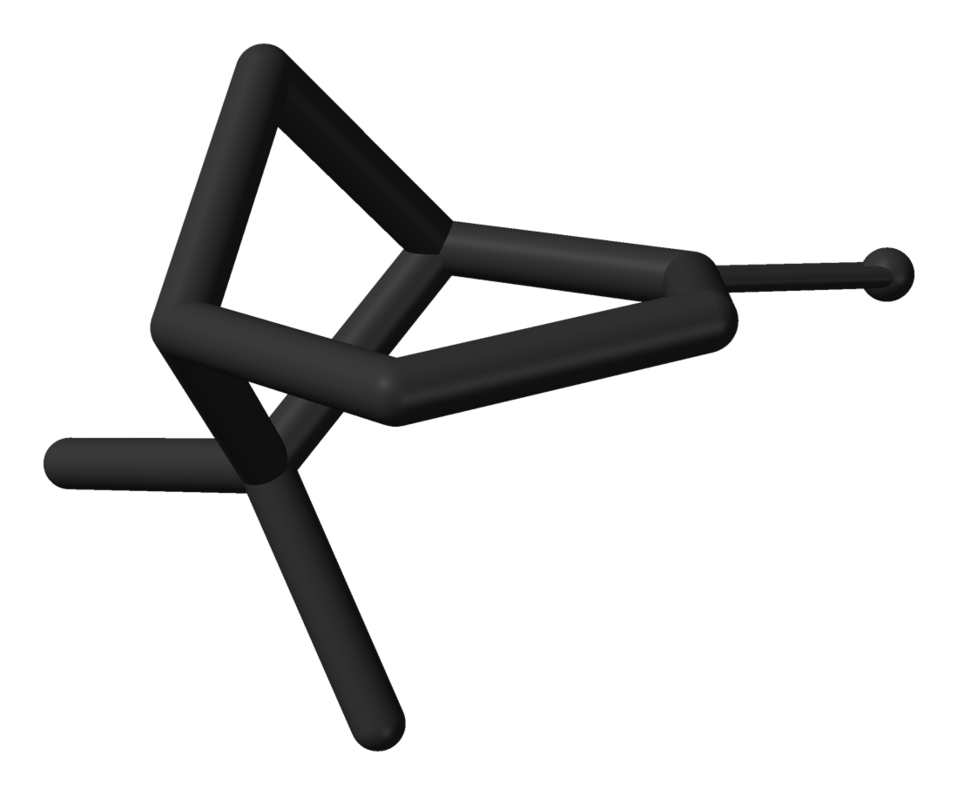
Stick model of the (1S)-(−)-β-pinene molecule, C10H16. X-ray crystallographic data from A. D. Bond and J. E. Davies (November 2001). '(1S)-(−)-β-Pinene'. Acta Cryst. 'E57' (11): o1041-o1042. DOI:10.1107/S1600536801016427. Image generated in Accelrys DS Visualizer.